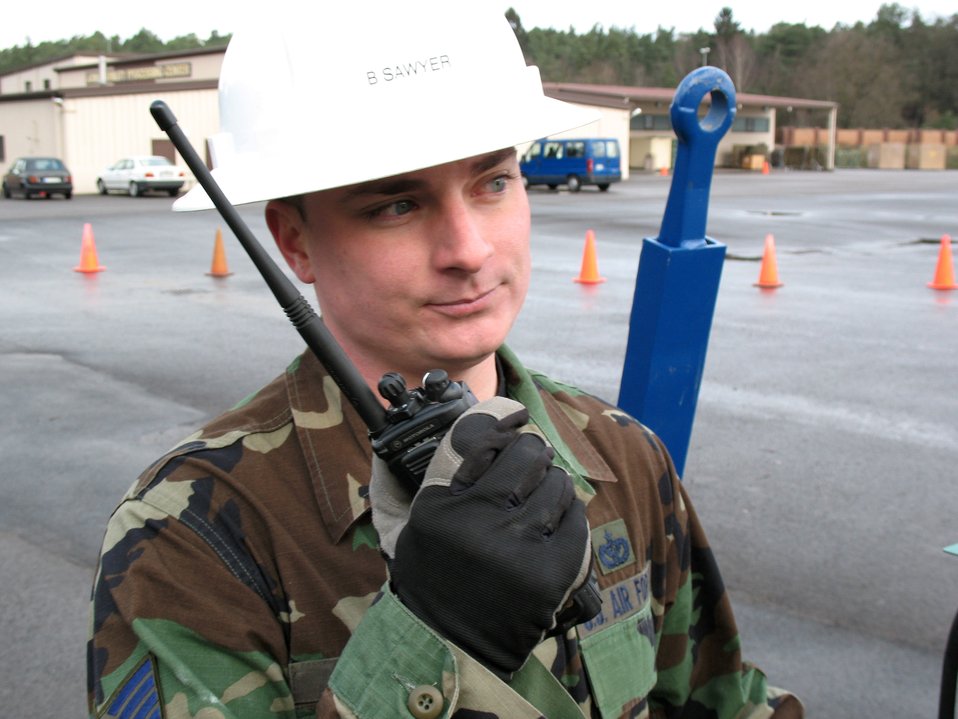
Mission failure means 'lights out' for engineers

Staff Sgt. Brian Sawyer, an electrical systems craftsman at Ramstein Air Base, Germany, communicates with his civil engineer team while lowering a light pole on the flightline Feb. 13 to repair non-working lights.